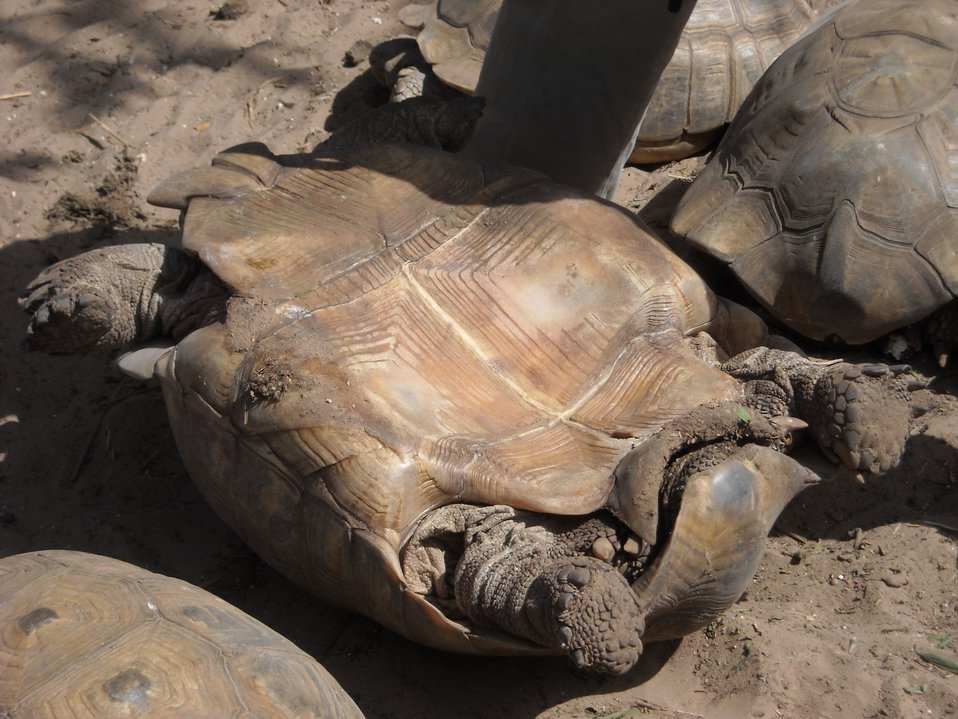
Male tortoise